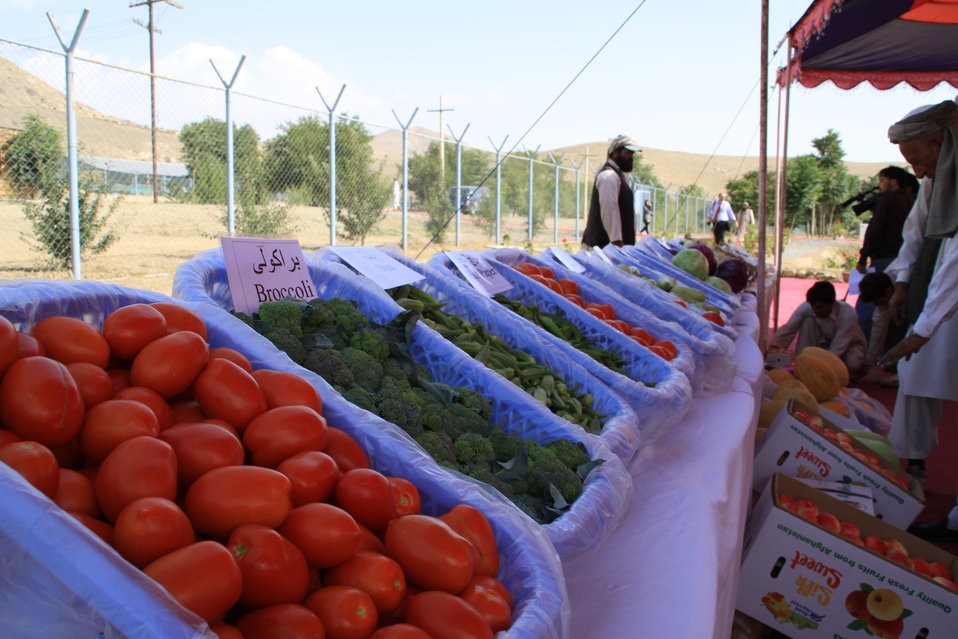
Badam Bagh Farm